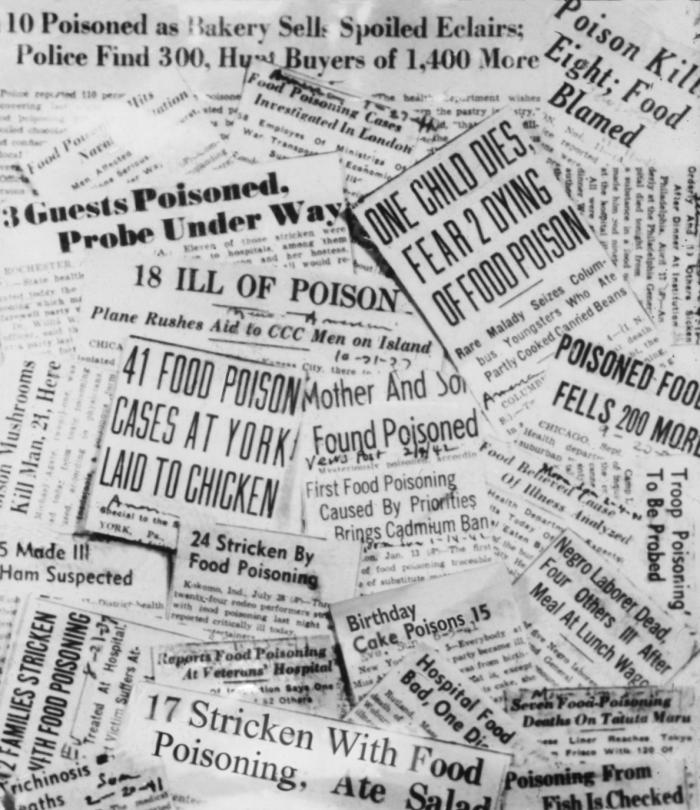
Food poisoning newspaper headlines

This collage displayed newspaper headlines related to food poisoning stories. It was created by the Minnesota Department of Health in the 1930s, and its message was part of a campaign admonishing citizens to be aware that safe food cannot be taken for granted.